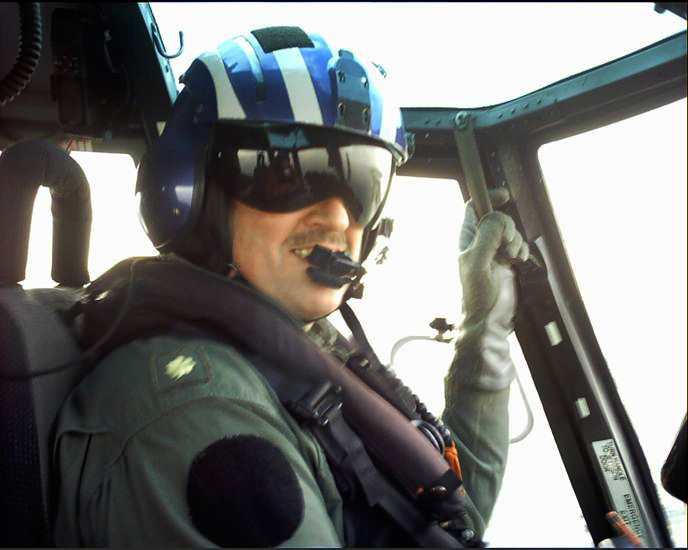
Bruce Decker, Chief, Division of Program & Partnership Support in External Affairs Washington Office, served in the Coast Guard from 1980 to 1986, took a break in service, then served from 1990 to 2007. He spent time as an enlisted man mostly on the West Coast, but his officer time was on the East Coast. He reached Lieutenant Commander.